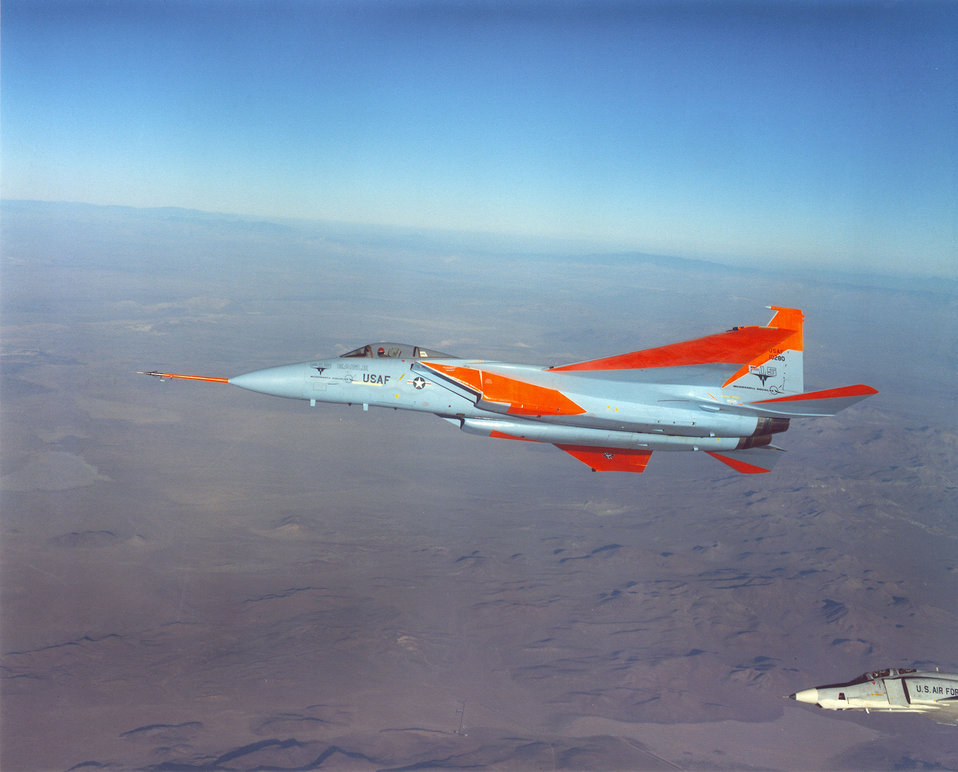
First preproduction F-15A Eagle

The first preproduction F-15A air superiority fighter from McDonnell Douglas flew its maiden flight July 27, 1972. The aircraft was evaluated at Edwards Air Force Base, Calif., and it was delivered for operational use before 1976. In its prime, the F-15 Eagle would dominate the sky.